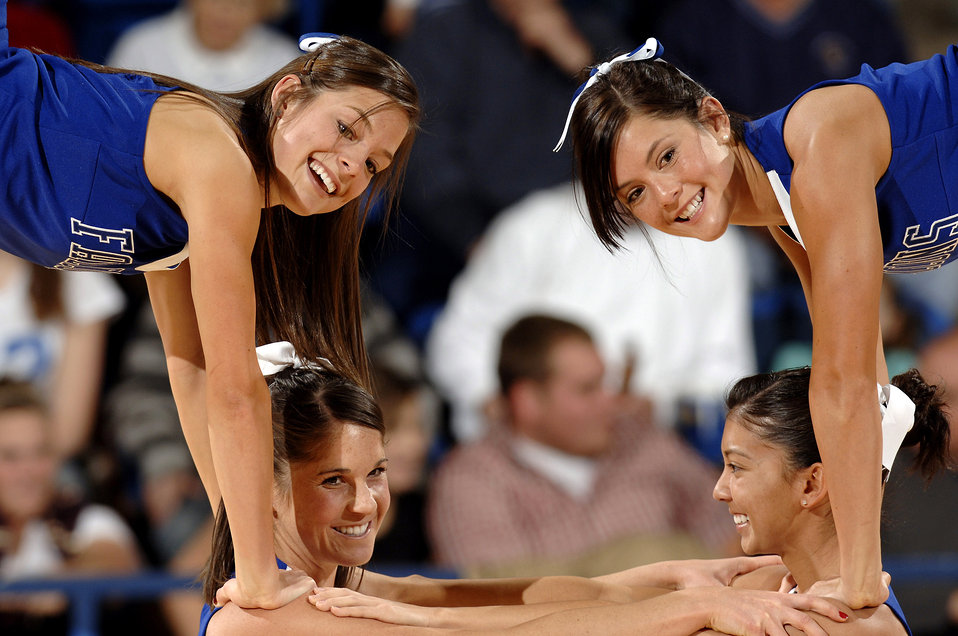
Showing our spirit!

The Air Force Academy's Spirit Team Blue squad performs a routine during the Falcon's win Dec. 13 over Norfolk State 65-53.